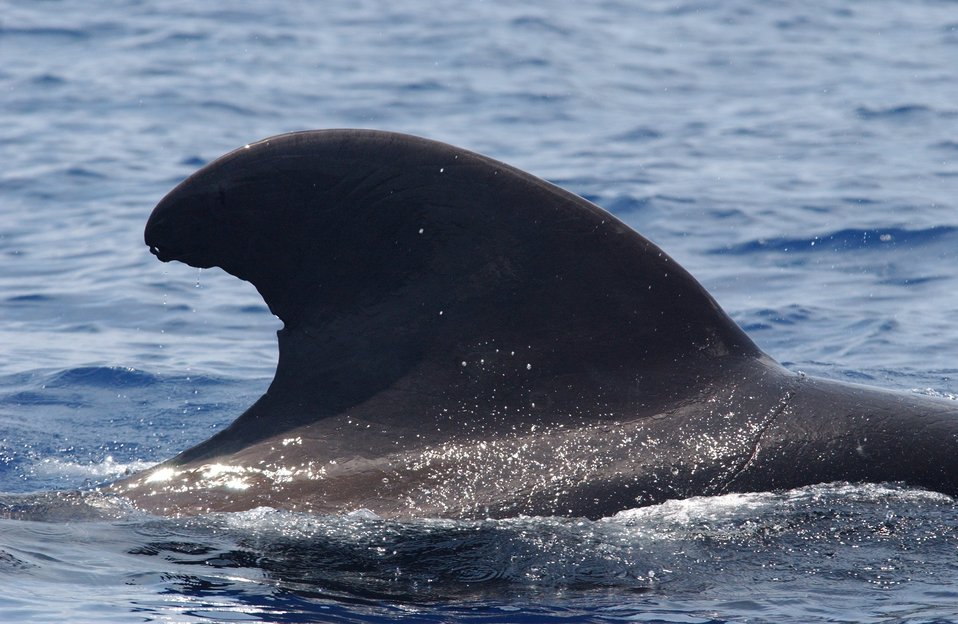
Pilot whale